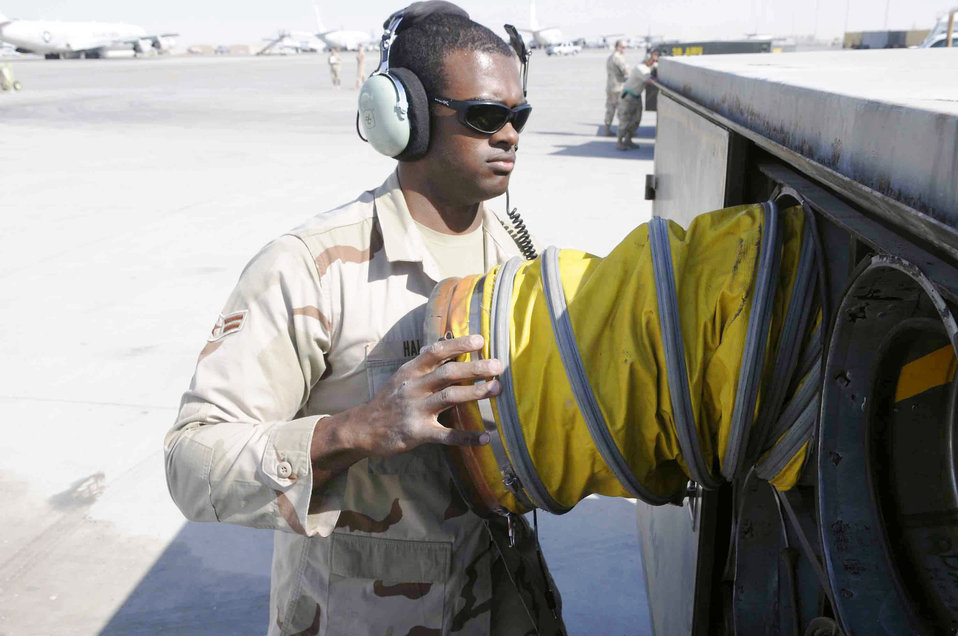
RC-135 surpasses 50,000 flying-hour mark

Airman 1st Class Michael Hall stores hoses removed from an RC-135 Rivet Joint March 12 at a Southwest Asia air base. Aircraft hoses are used to keep the inside of the aircraft cool. Airman Hall, assigned to the 379th Expeditionary Reconnaissance Squadron, is deployed from Offutt Air Force Base, Neb.